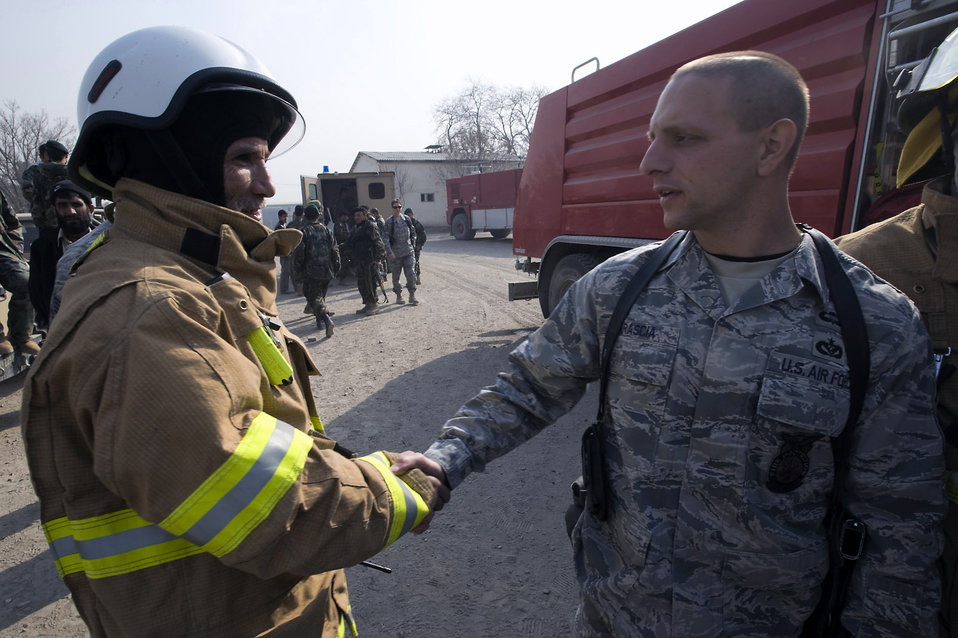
Airman helps shape future Afghan firefighters

Afghan National Army Air Corps Joint Fire Academy commandant, Master Sgt. Mike Marascia, shakes hand with ANAAC fire chief, Maj. Razuddin after a successful exercise. The ANAAC firefighters extinguished a fire in a abandoned building. Sergeant Marascia is a fire protection mentor.